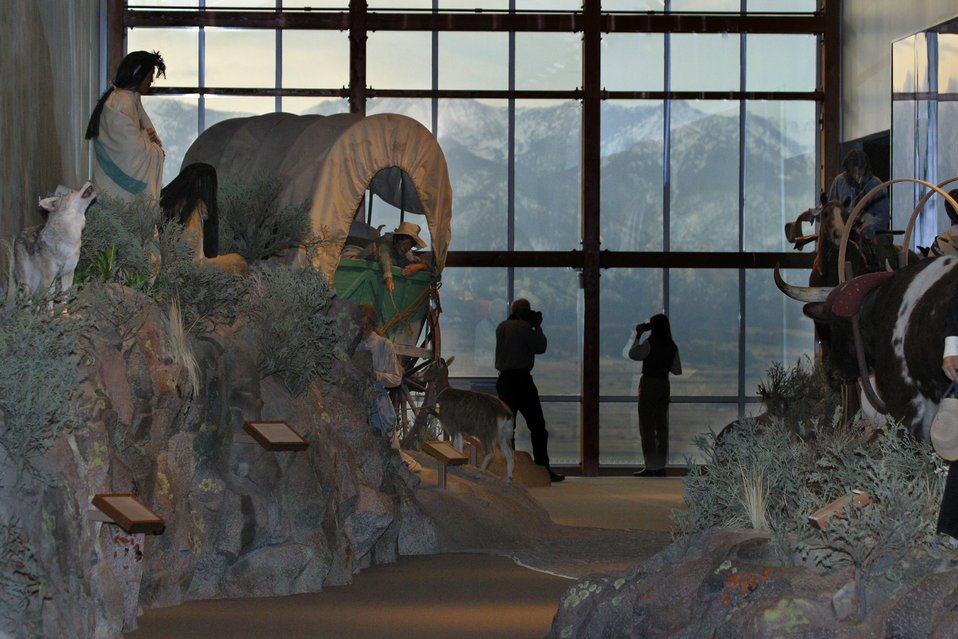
The Elkhorn Mountains can be seen from the Gallery window.